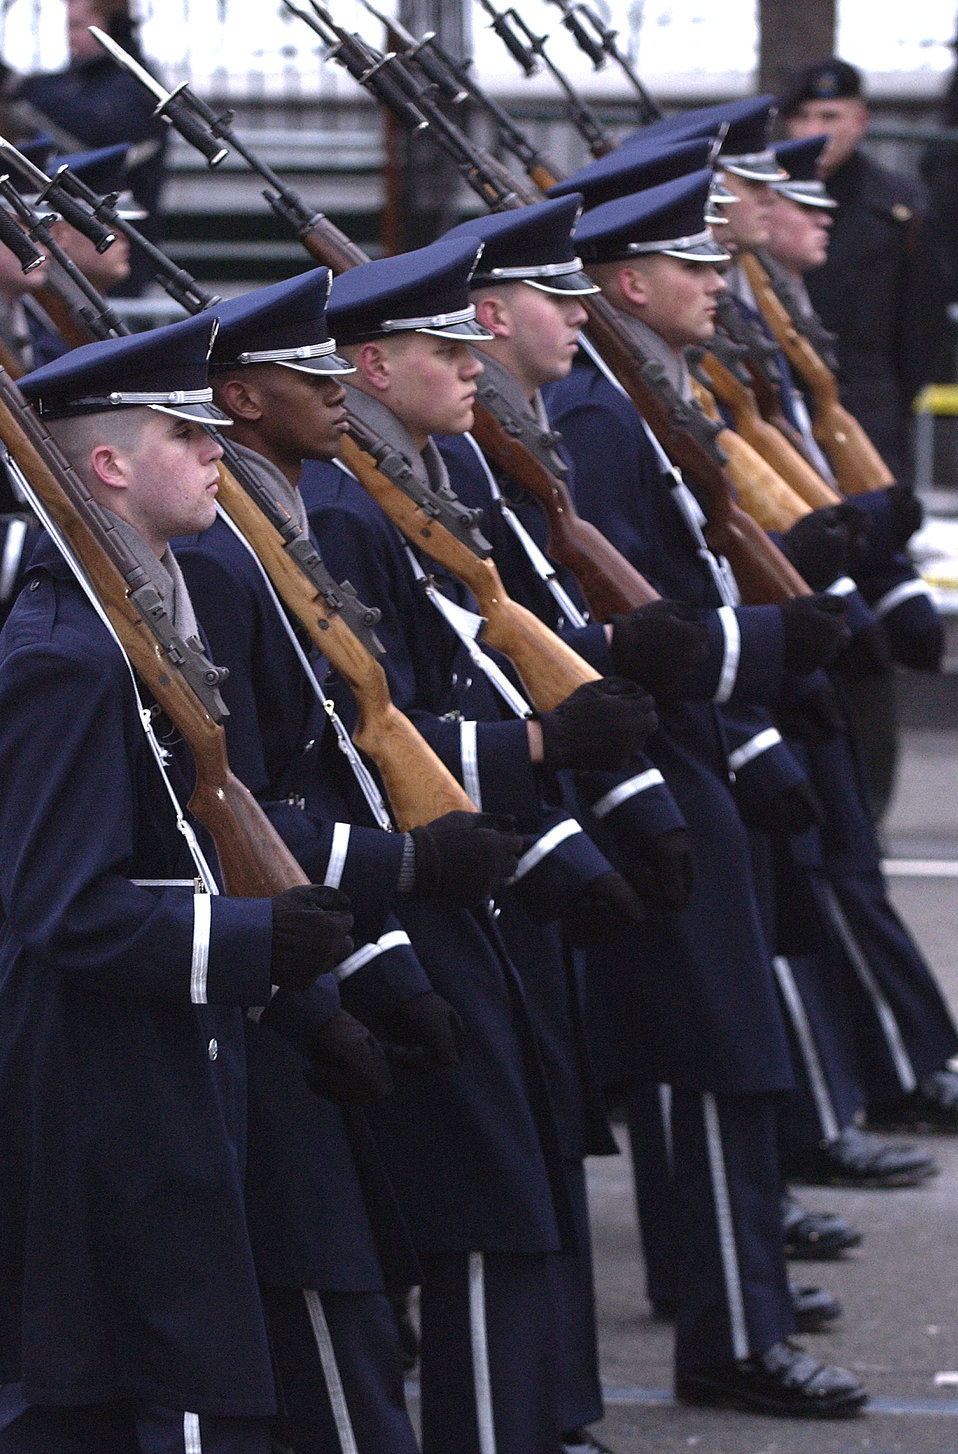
Airmen march in inaugural parade

WASHINGTON -- The U.S. Air Force Honor Guard marches in the 2005 Presidential Inaugural Parade here Jan. 20. More than 5,000 servicemembers provided military ceremonial support to the presidential inauguration. Support included musical units, marching units, color guards, firing details and salute batteries.